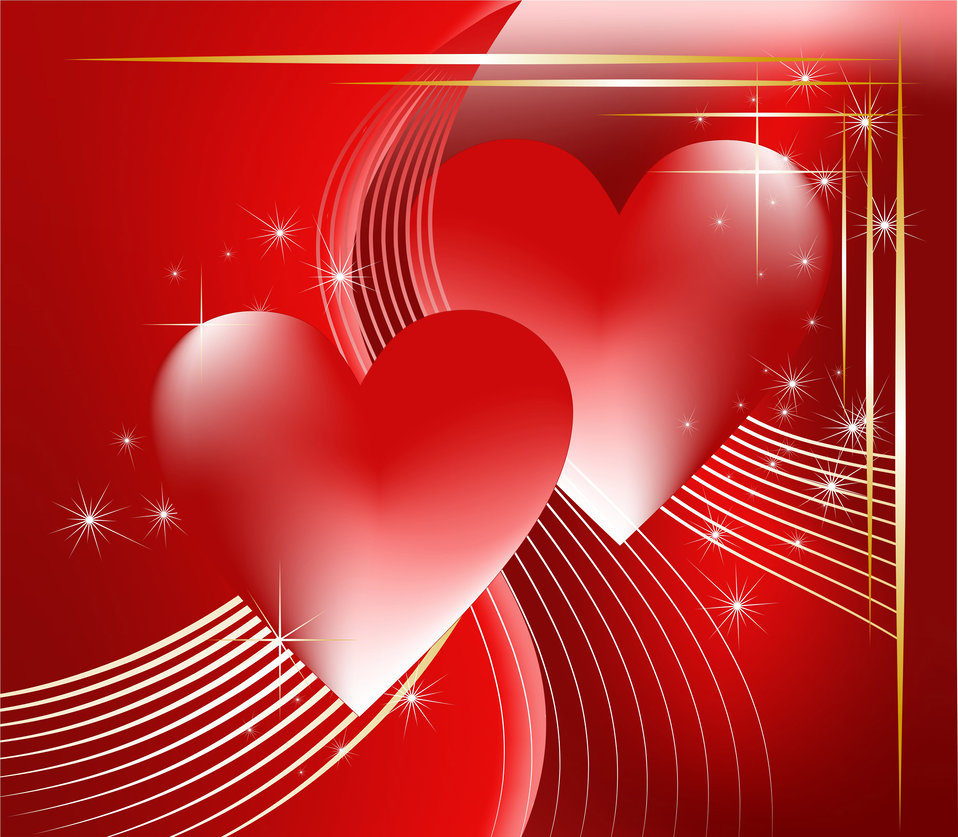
Background with hearts

Red abstract background with hearts, glitter and gold lines..